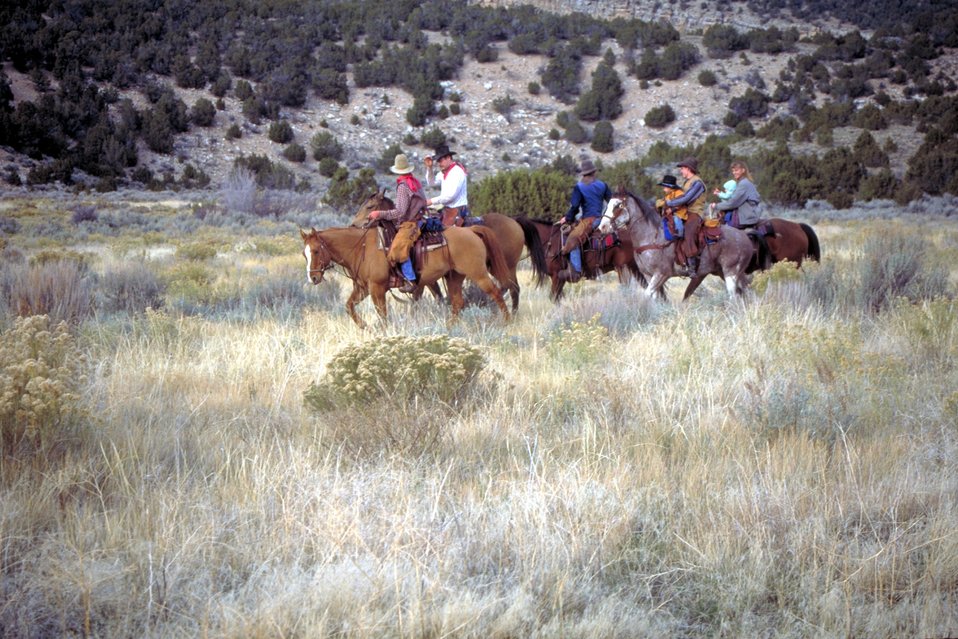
Working cowboys living near Vernal, Utah.